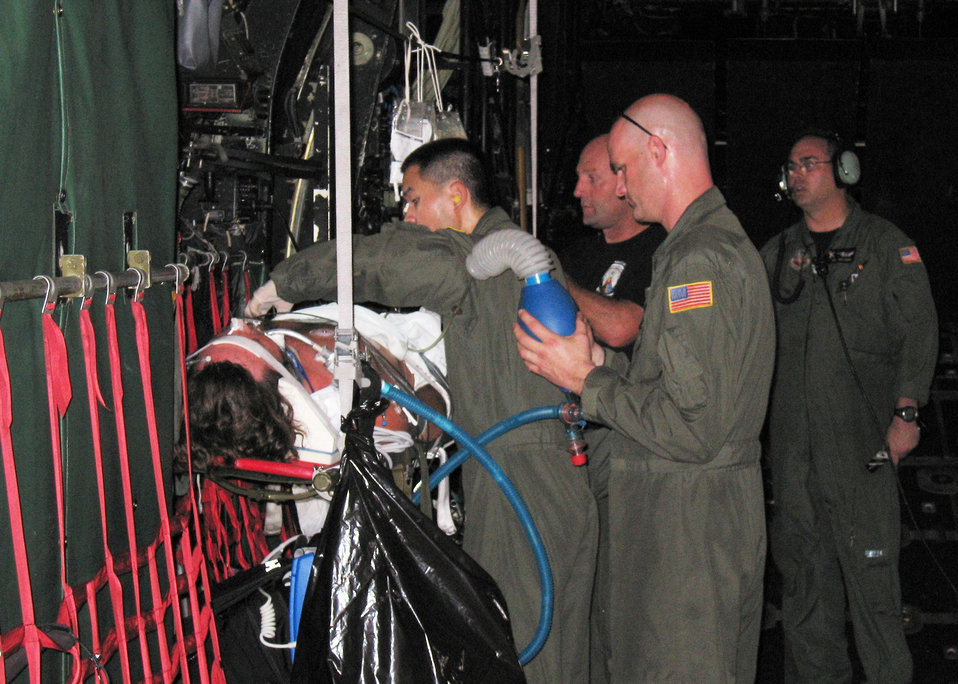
Mexico Rescue

Staff Sgt. Darren Pon administers aid to the patient as Master Sgt. Eric Degner and Senior Master Sgt. Simmons provide support. Loadmaster, Master Sgt. Michael Henry, stands by in the background to assist as needed.